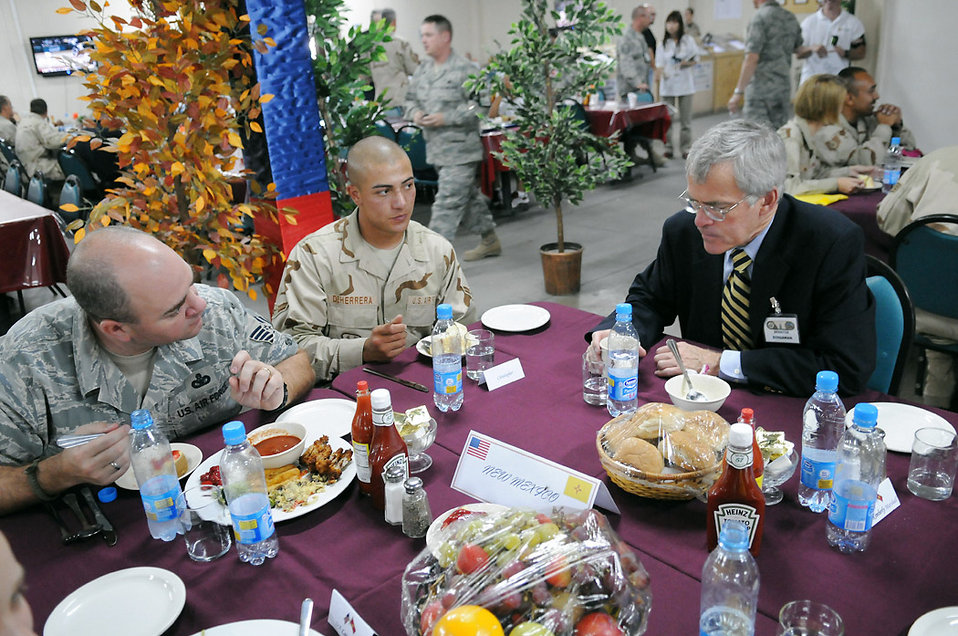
Congressmen visit servicemembers in Manas

Sen. Jeff Bingaman talks with Master Sgt. Ken Clark, a Las Cruces, N.M. native, and Airman 1st Class Christopher Deherrera, who is deployed from Holloman Air Force Base, N.M. The New Mexico senator and four others visited Manas, Aug. 5, as a part of an eight-day congressional delegation trip to promote security, democracy and development in central Asia. While at Manas, the senators visited with deployed Airmen and learned about the wing's mission as an air mobility hub supporting operations in Afghanistan.